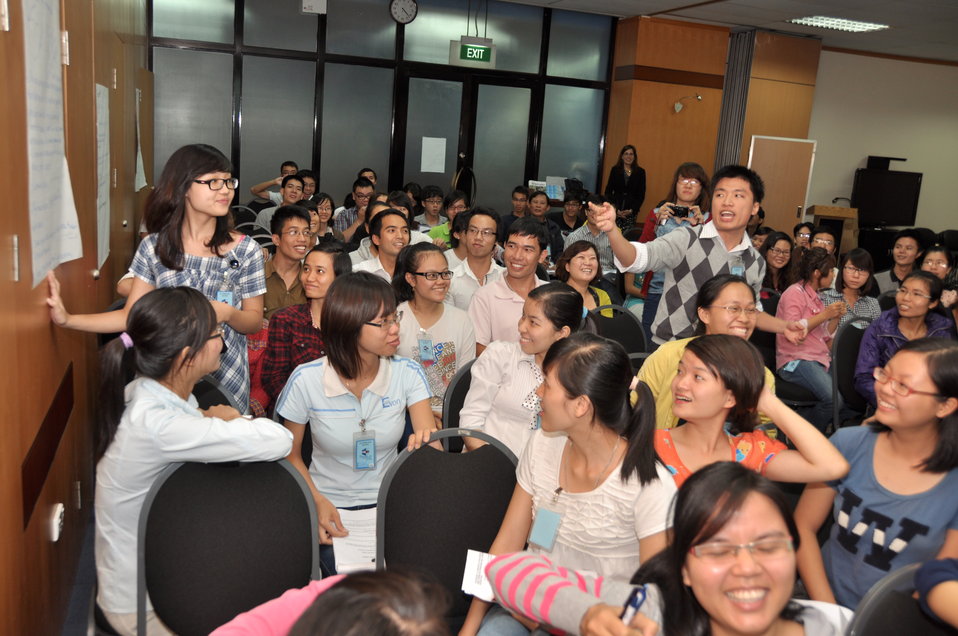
Vietnamese university students join the Business Plan Mashup exercise

Photo: @USAIDVietnam, November 16, 2012